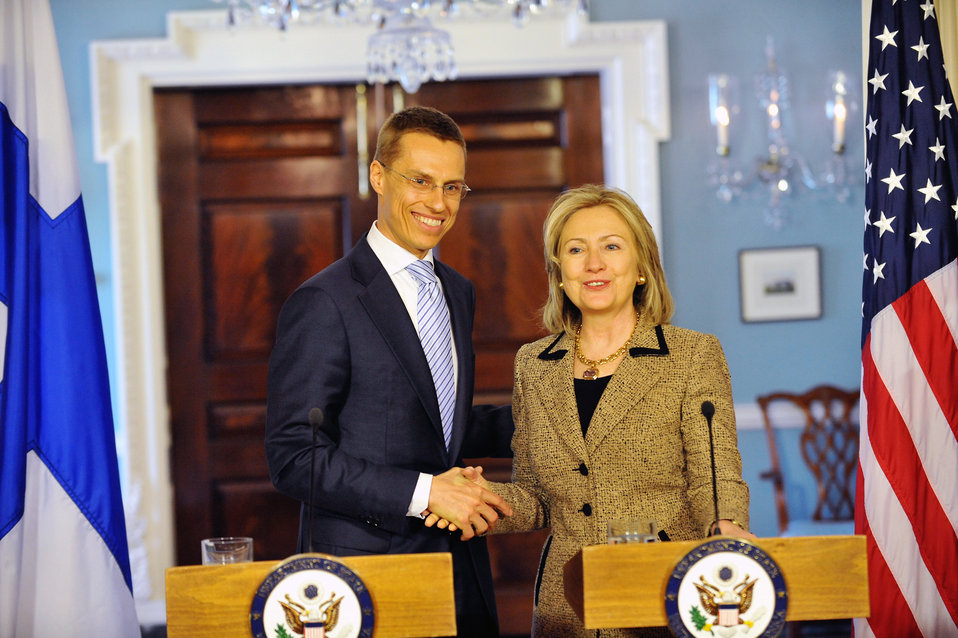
Secretary Clinton Shakes Hands With Finnish Foreign Minister Stubb

U.S. Secretary of State Hillary Rodham Clinton shakes hands with Finnish Foreign Minister Dr. Cai-Goran Alexander Stubb after their bilateral meeting, at the U.S. Department of State in Washington, D.C., on April 11, 2011.